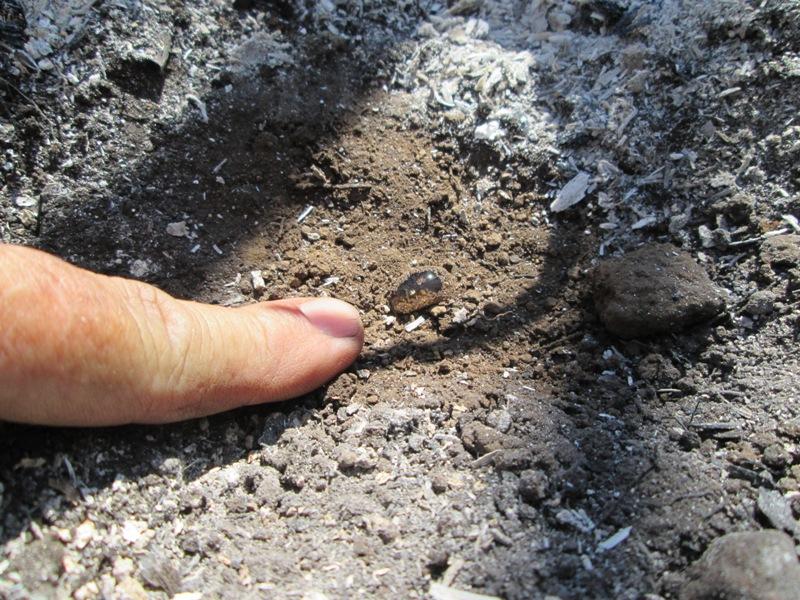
This is an example of soil water repellency damage from the Rim Fire. Soil water repellency (hydrophobicity) reduces the affinity of soils to absorb moisture, which has detrimental and often costly implications for plant growth. Water repellency includes the reduced infiltration capacity of soils, enhanced overland flow and accelerated soil erosion, uneven wetting patterns, development of preferential flow and the accelerated leaching of agrichemicals. BAER is a rapid assessment of burned watersheds by a BAER team to identify imminent post-wildfire threats to human life and safety property and critical natural or cultural resources on National Forest System lands and take immediate actions to implement emergency stabilization measures before the first major storms. Fires result in loss of vegetation exposure of soil to erosion and increased water runoff that may lead to flooding increased sediment debris flows and damage to critical natural and cultural resources. BAER team members implement seeding and mulching installation to prevent erosion, erect temporary water run-off control structures that will protect recovering areas, and installation of warning signs, replace safety related facilities, remove safety hazards, prevent permanent loss of habitat for threatened and endangered species, and prevent the spread of noxious weeds and protect critical cultural resources. The Rim Fire in the Stanislaus National Forest near in California began on Aug. 17, 2013 and is under investigation. The fire has consumed approximately 256,169 acres and is 84% contained.